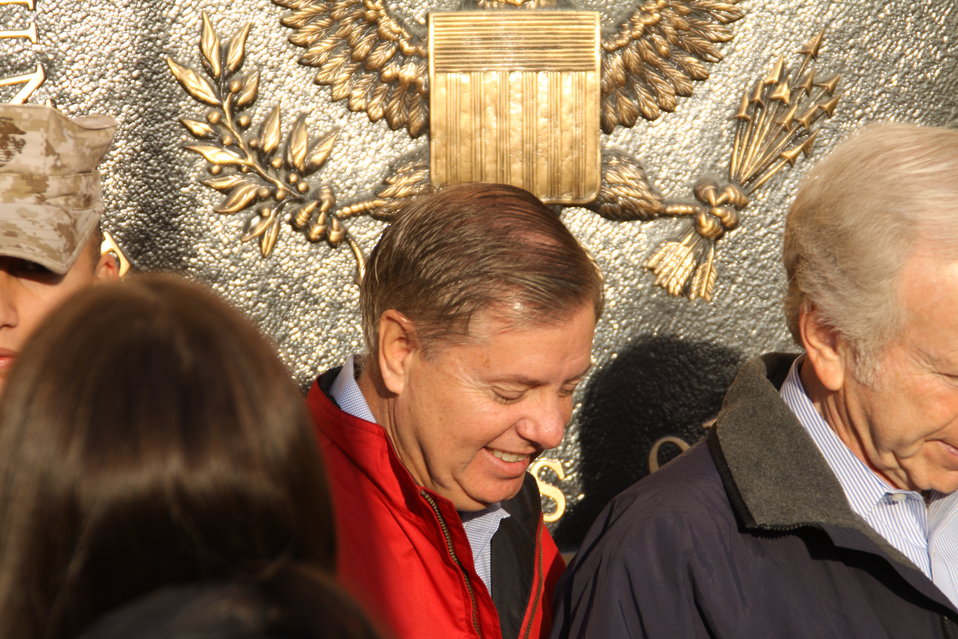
Senator Graham